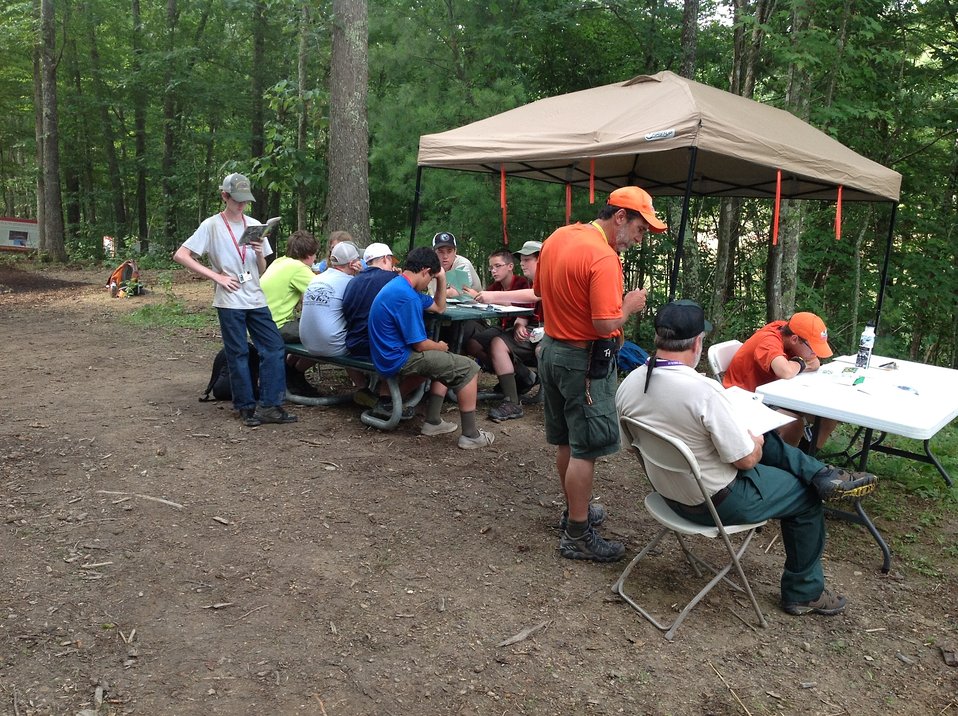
Scouts work on Pulp and Paper merit badge at the USFS exhibit

Boy Scouts work on pulp and paper merit badge at the Forest Service exhibit.